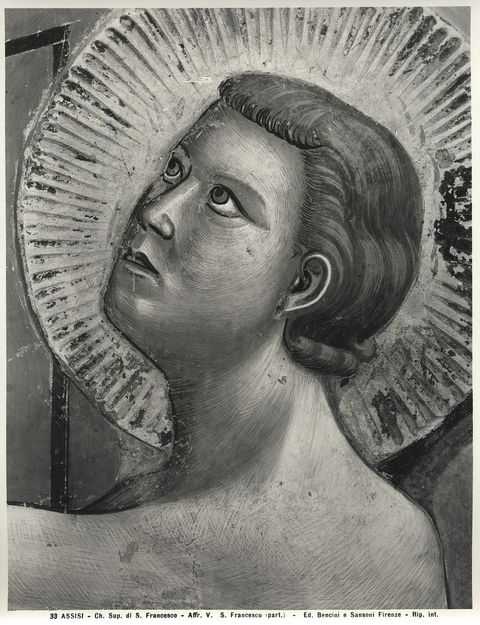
'giotto', rinuncia ai beni 15